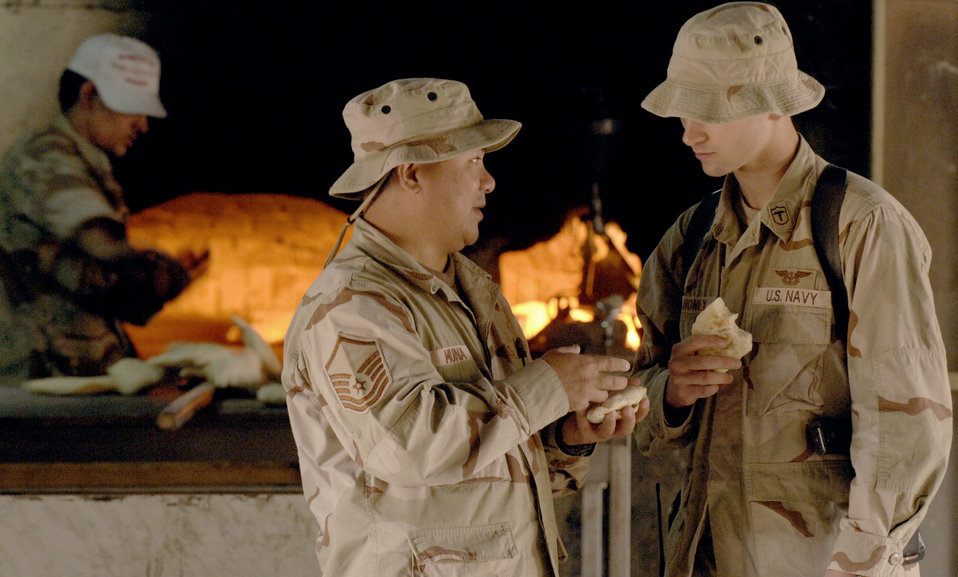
Public health inspections

Master Sgt Mark Muna and Navy Medical Corpsman Michael Mahoney take a break while training Iraqi bakers on how to conduct proper public health inspections in a bakery.